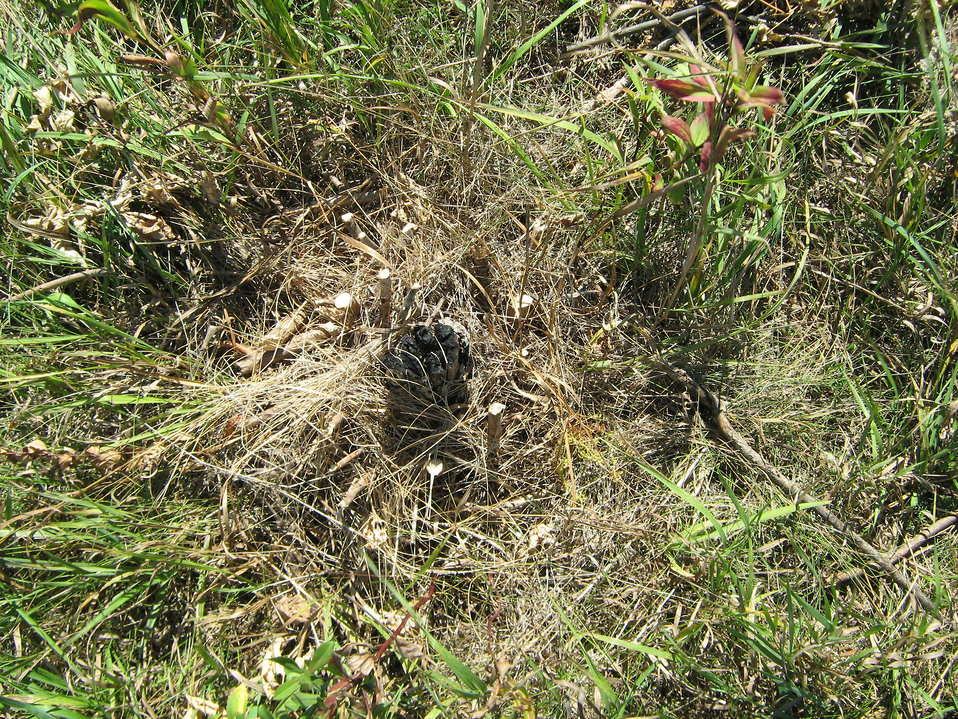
Grazing allows us to see tree resprouts

We try to follow our intensive grazing treatments with tree removal and stump treatment. Grazing makes finding all of these small trees easier!.